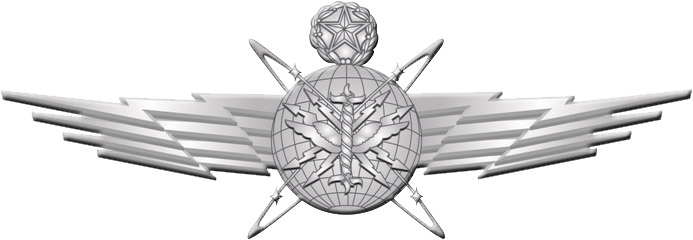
Cyberspace career fields, training paths, badge proposed

The proposed cyberspace operator badge. The wear criteria is still under review.